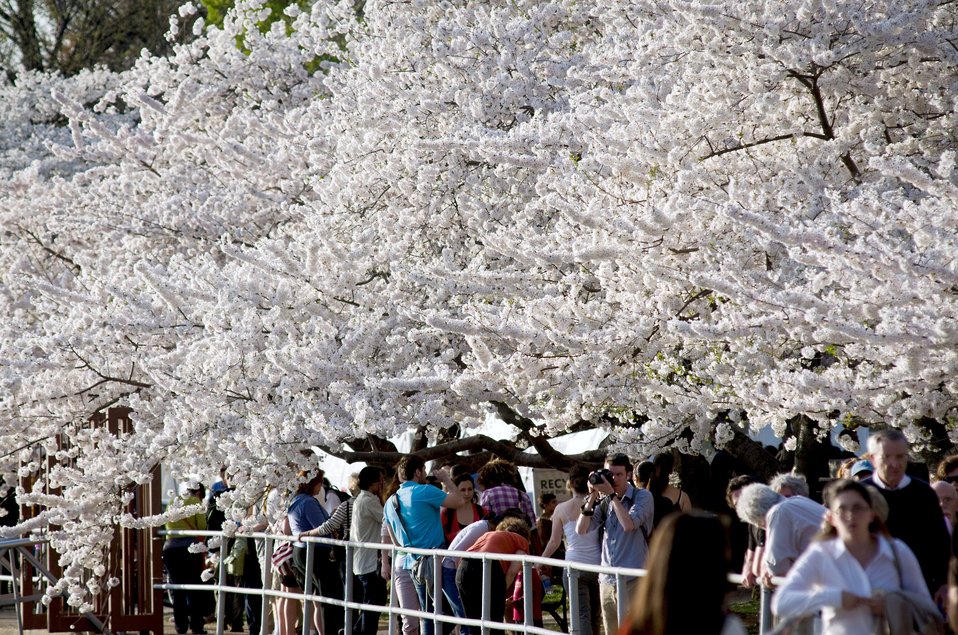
Cherry blossoms at the Tidal Basin in Washington, D.C., on Tuesday, March 20, 2012.